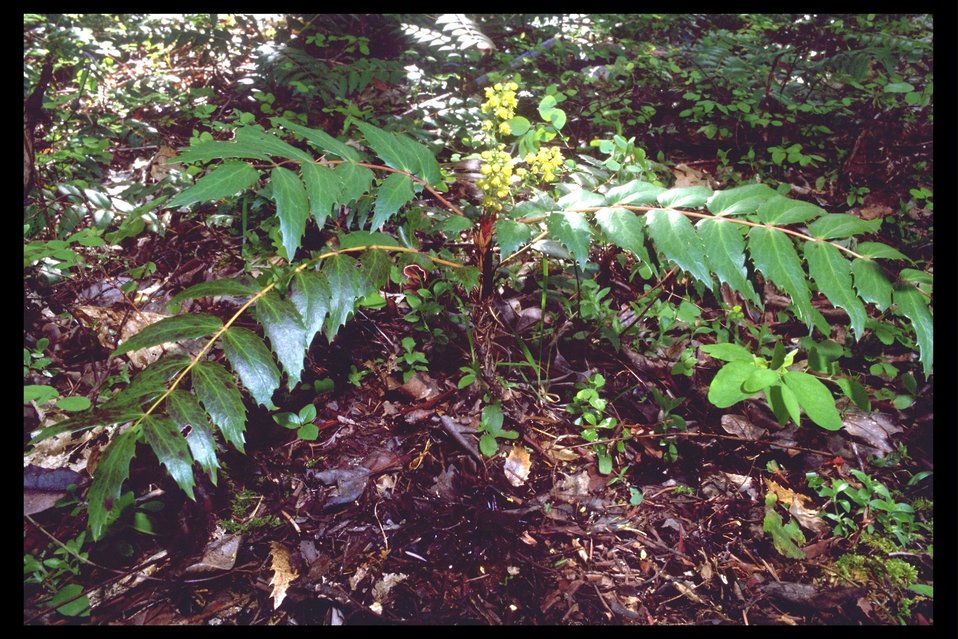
Dwarf Oregon Grape (Berberis nervosa) near Lost Creek Lake.